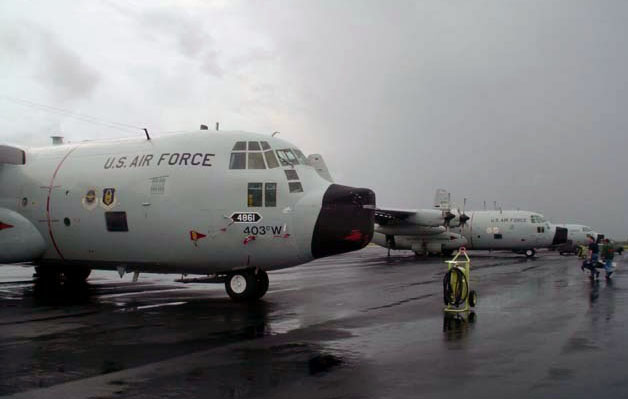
'Hurricane Hunters' track storm threatening their home

HOMESTEAD AIR RESERVE BASE, Fla. -- WC-130 aircraft from the 403rd Wing at Keesler Air Force Base, Miss., sit on the ramp here Sept. 15. Hurricane Ivan threatened Keesler and the Gulf Coast, so the